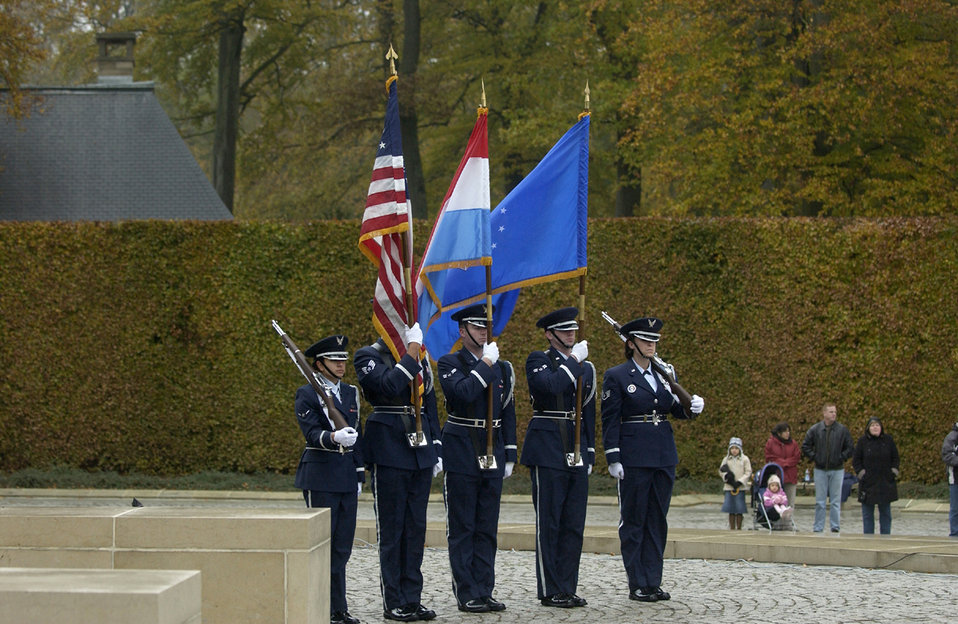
Spangdahlem Airmen honor veterans

An honor guard posts the colors during a Veterans Day ceremony at the Luxembourg American Cemetery and Memorial Nov. 11. The honor guard members part of the more than 90 people from Spangdahlem Air Base, Germany, who traveled to Luxembourg to pay their respects.